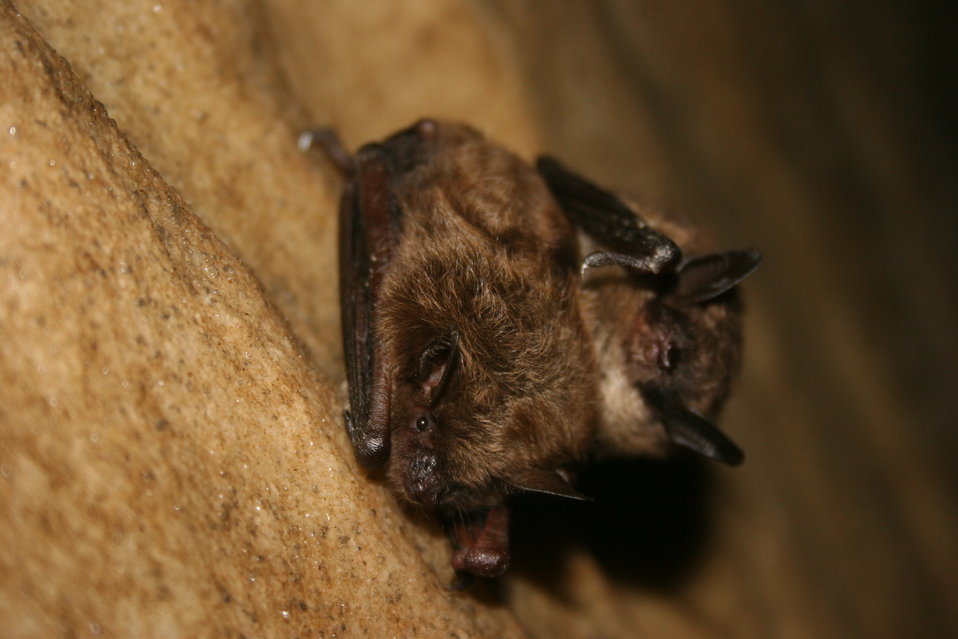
Healthy little brown bats in Mt. Aeolus Cave